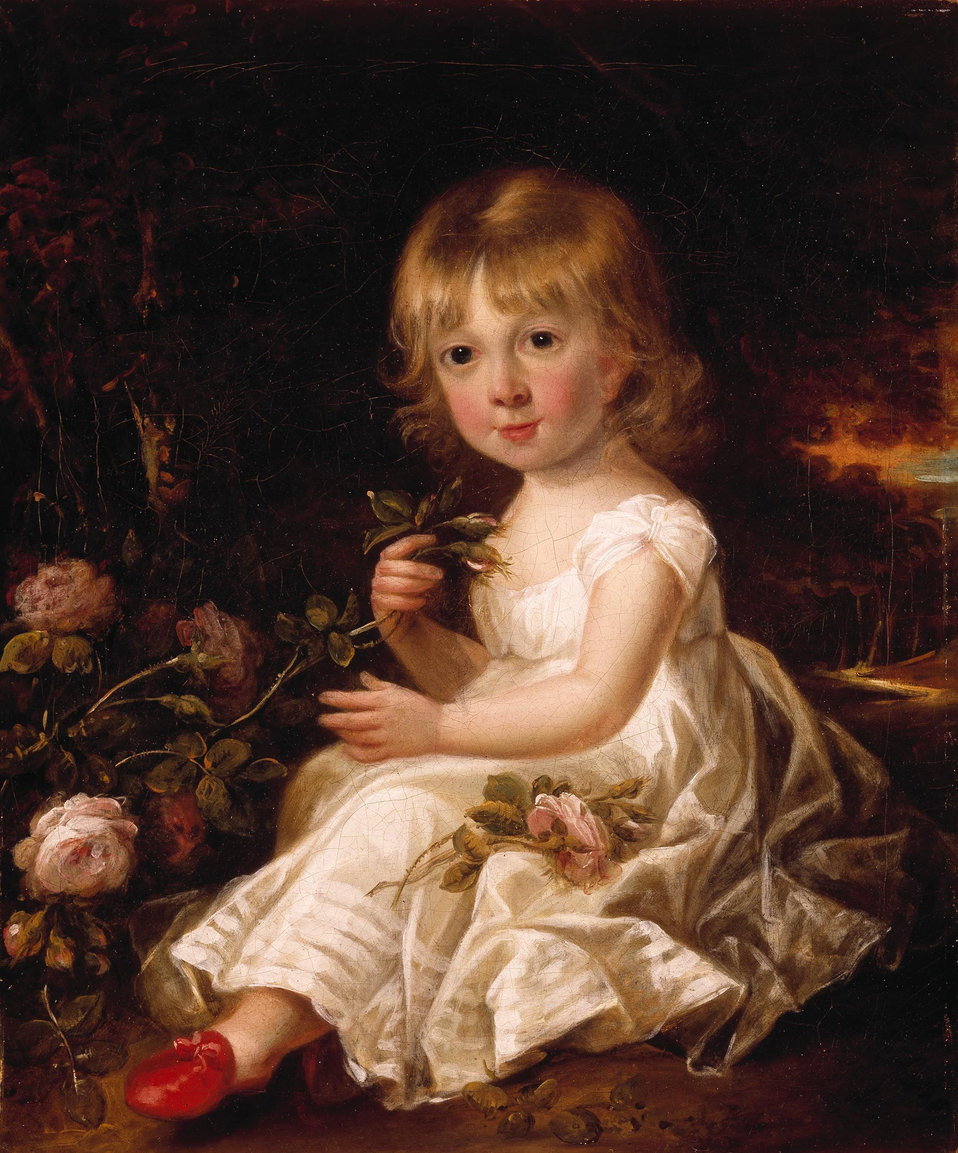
Portrait of a Young Girl by Sir William Beechey, RA